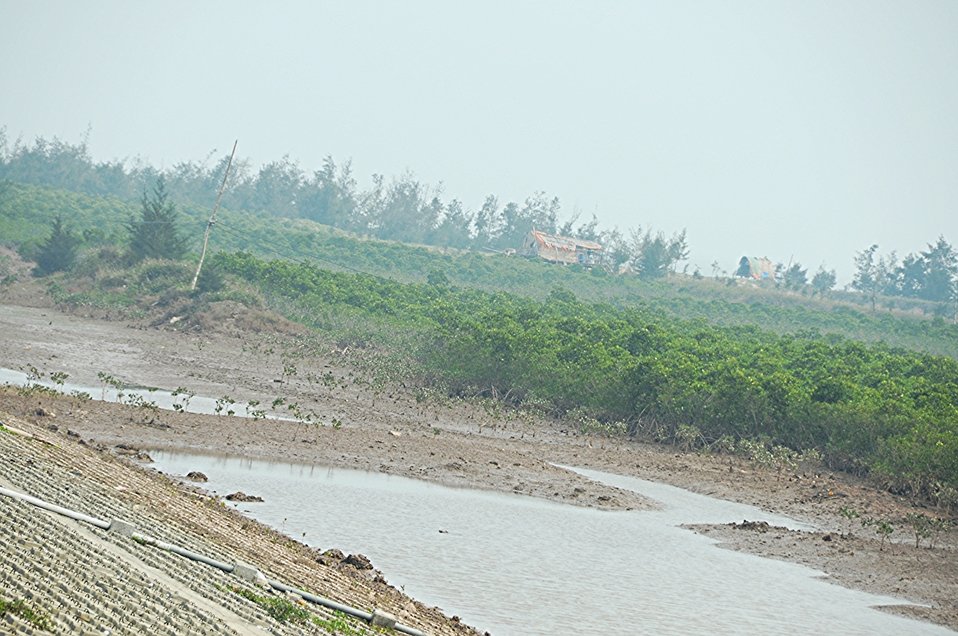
Mangrove forests in Nam Dinh Province.

Quat Lam, Nam Dinh. January 16, 2014.